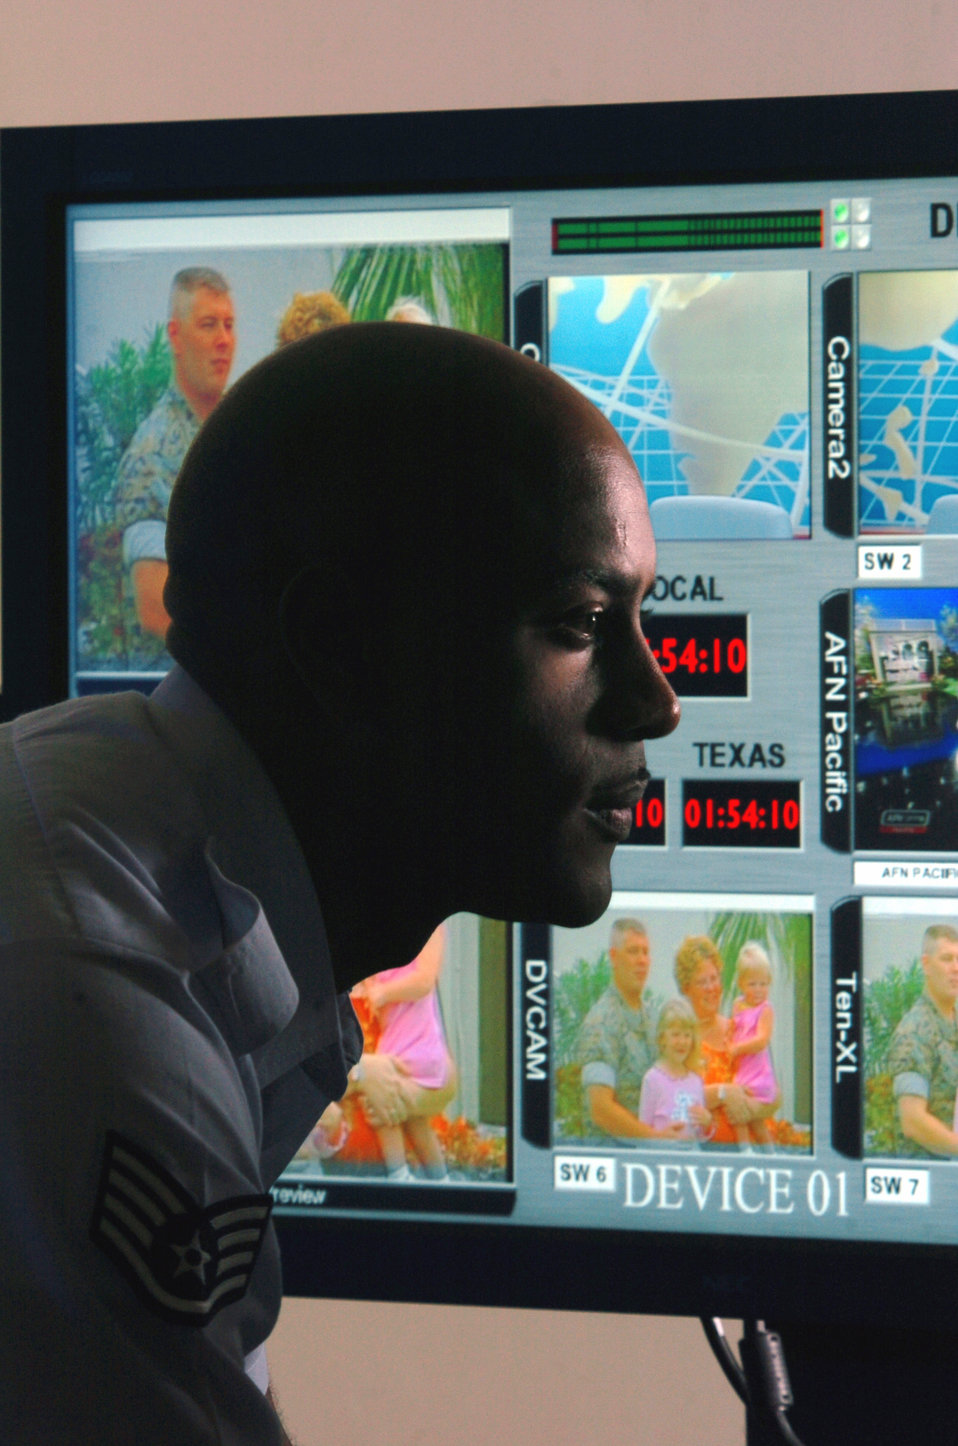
Behind the news scene

YOKOTA AIR BASE, Japan -- Staff Sgt. Norris Agnew uses digital-editing equipment to prepare a nightly